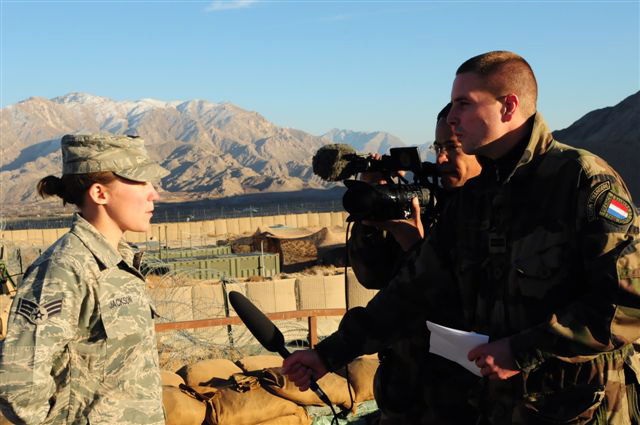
Senior Airman Ashley Jackson conducts an interview with French military reporters prior to receiving a phone call from President Barack Obama Nov. 26, 2009, at Forward Operating Base Morales-Frazier, Afghanistan. Airman Jackson, a medic with Provincial Reconstruction Team Kapisa, is originally from Lakeville, Minn. She is deployed from Eielson Air Force Base, Alaska.